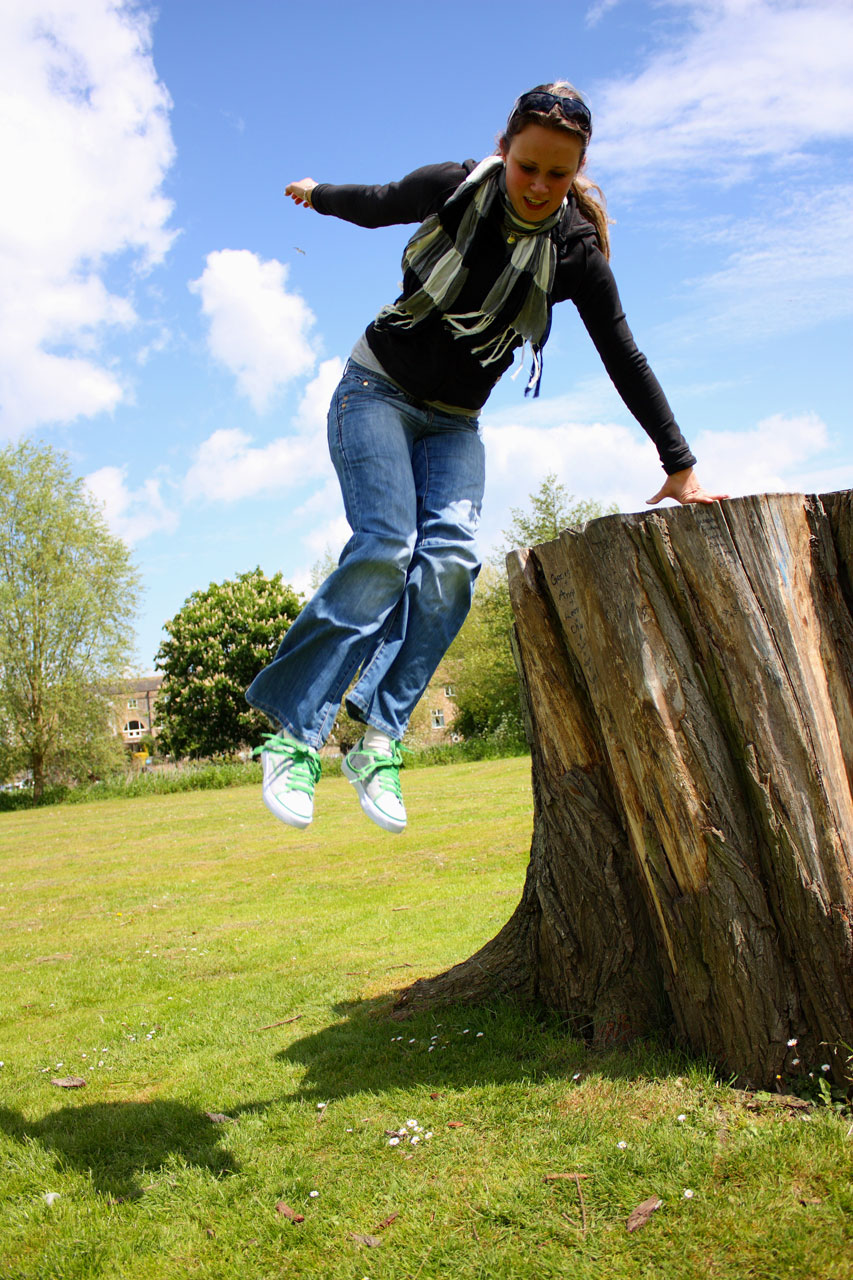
Girl jumping.